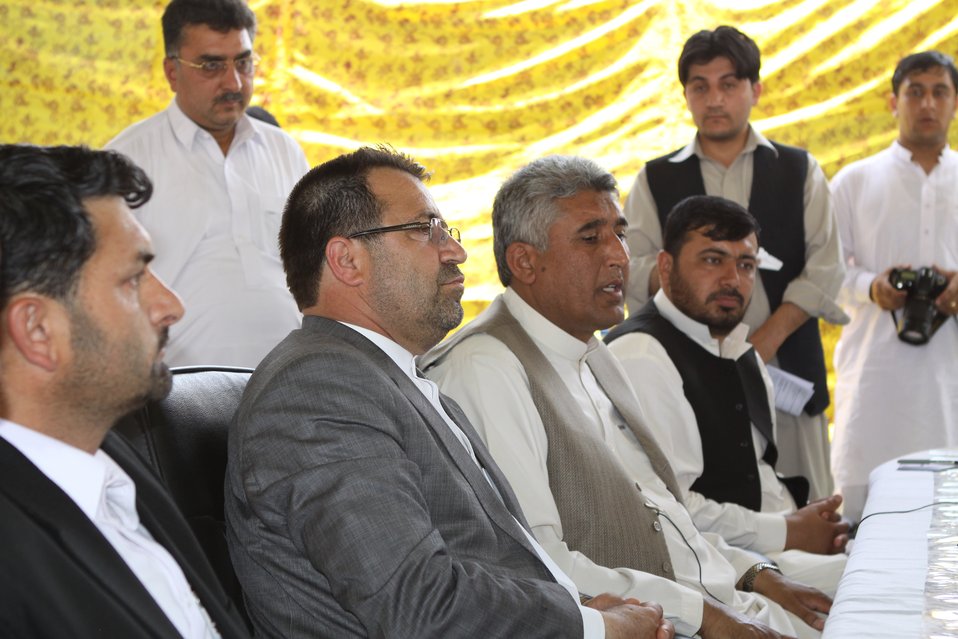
Bolan Poultry Farm